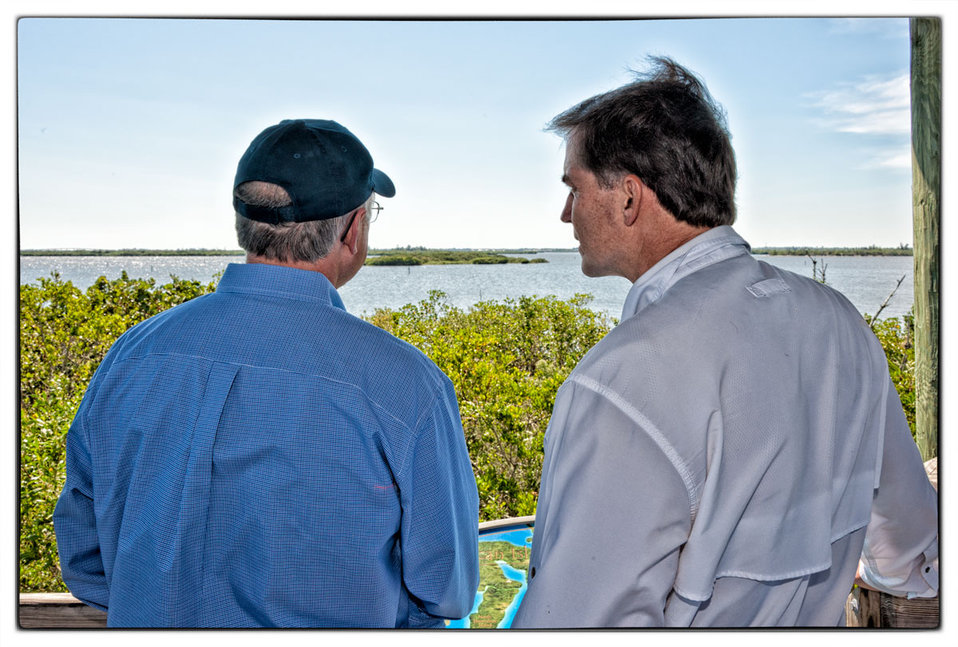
Secretary Salazar and Director Dan Ashe view Pelican Island

Secretary of the Interior Ken Salazar and U.S. Fish and Wildlife Service Director Dan Ashe at Pelican Island National Wildlife Refuge